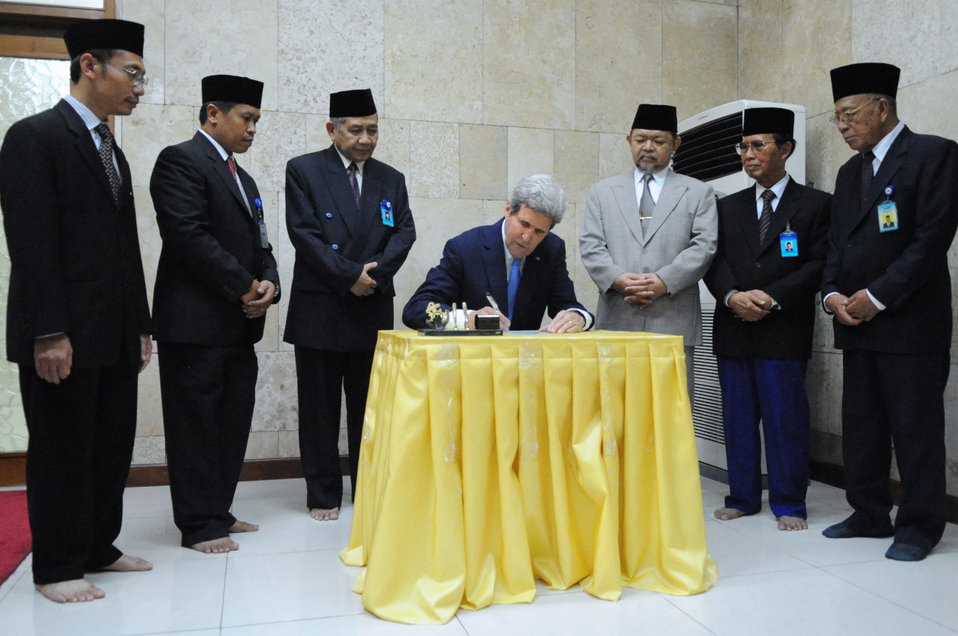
Secretary Kerry Signs Guest Book at Istiqlal Mosque

U.S. Secretary of State John Kerry, joined by Grand Imam Ali Mustafa Ya'qub and other leaders, signs the guest book at the Istiqlal Mosque in Jakarta, Indonesia, the largest mosque in Southeast Asia, on February 16, 2014.